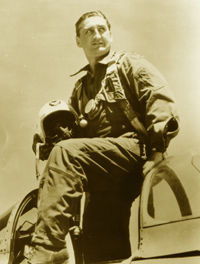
51st Fighter Wing Aces

Col. Francis Gabreski became the second ace of the wing on April 1, 1952. He was the Commander, 51st Fighter-Interceptor Wing. Col. Grabeski was an ace in two different wars, and he was the top Ace of the European Theater in World War II.